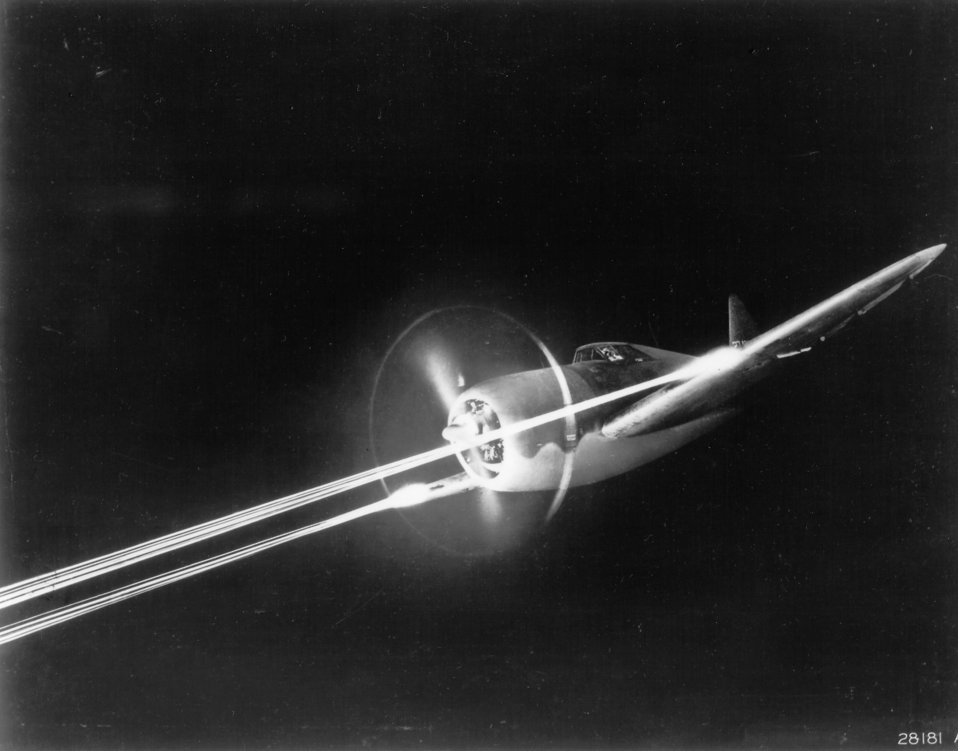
Republic P-47 Thunderbolt

1940's -- P-47 nicknamed